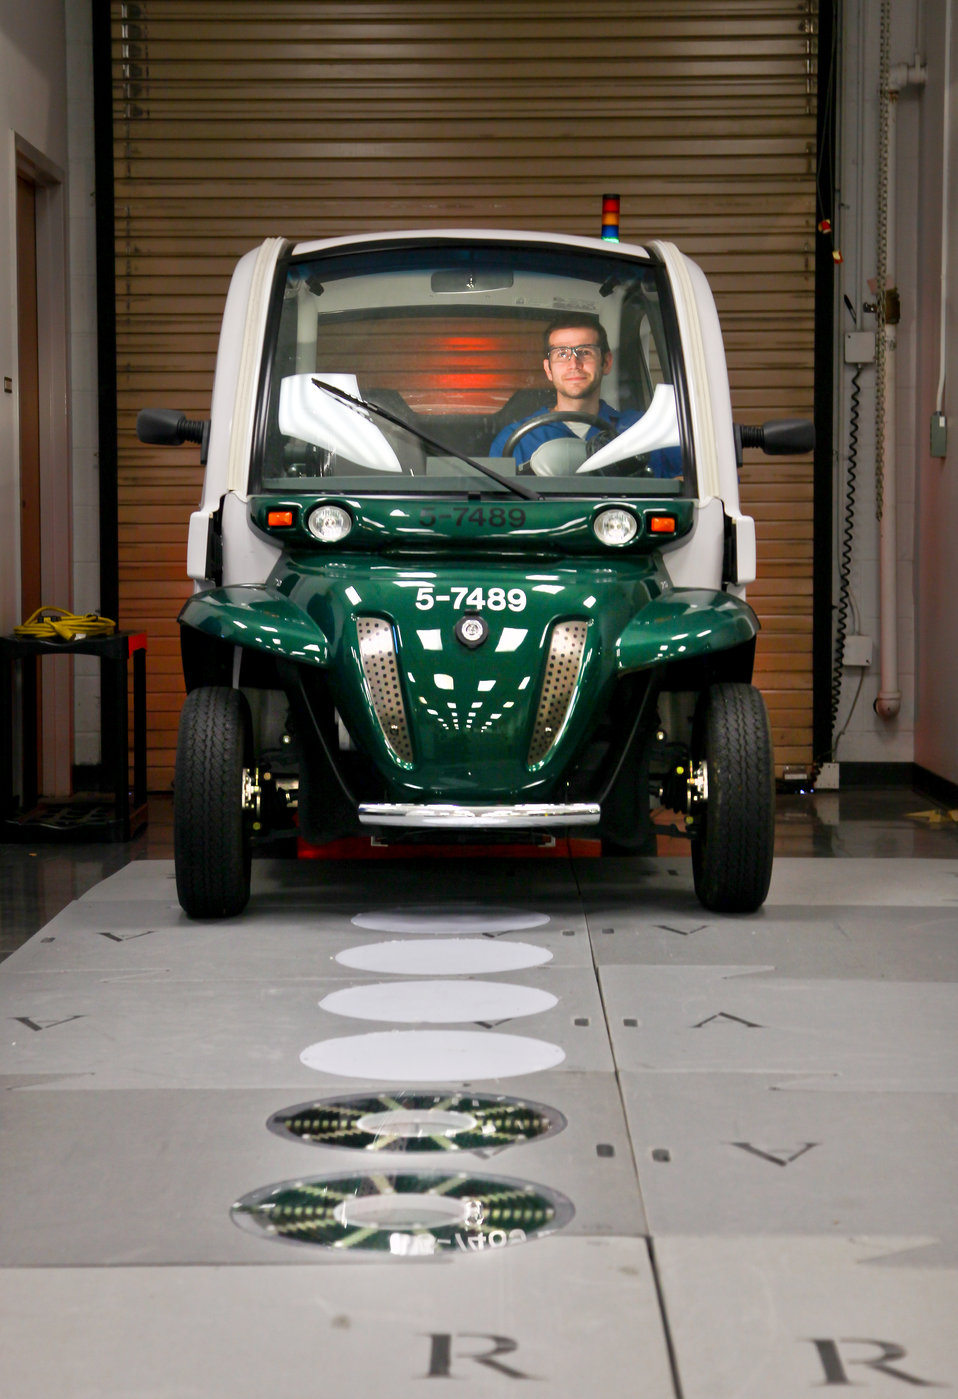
Researcher demonstrates an electric vehicle being wirelessly charged using ORNL technology. Power Electronics Lab at the National Transportation Research Center.